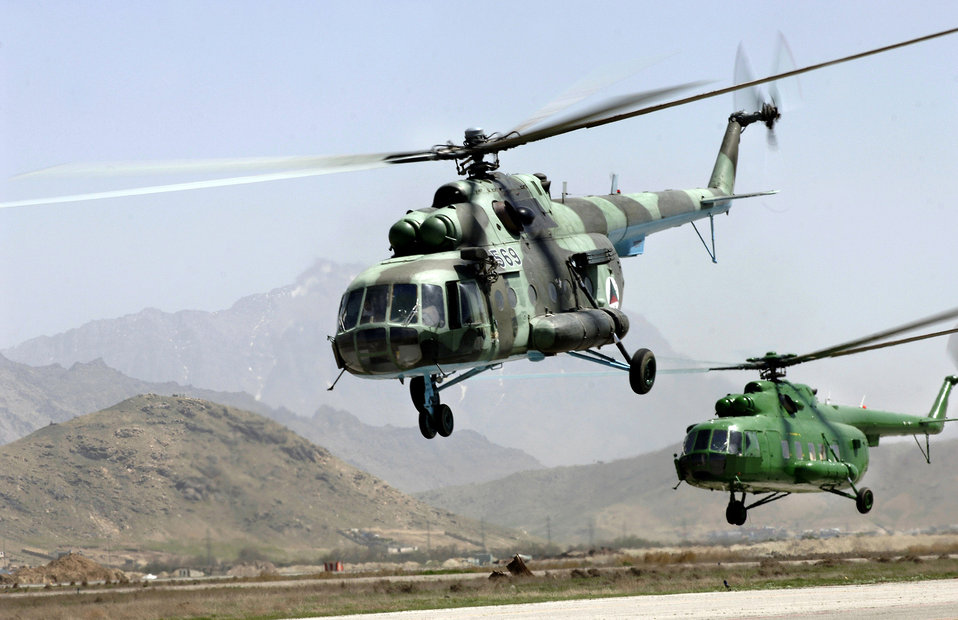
U.S. forces mentor Afghan Air Guard to 'stand on own'

Afghan National Air Corps MI-17 helicopters take off in a formation practice for the aerial parade in the upcoming Afghan National Day in Kabul. Air Force mentors assigned to Defense Reform Directorate Air Division under Combined Security Transition Command - Afghanistan provide guidance to soldiers with the Maintenance Operations Group for the ANAC.